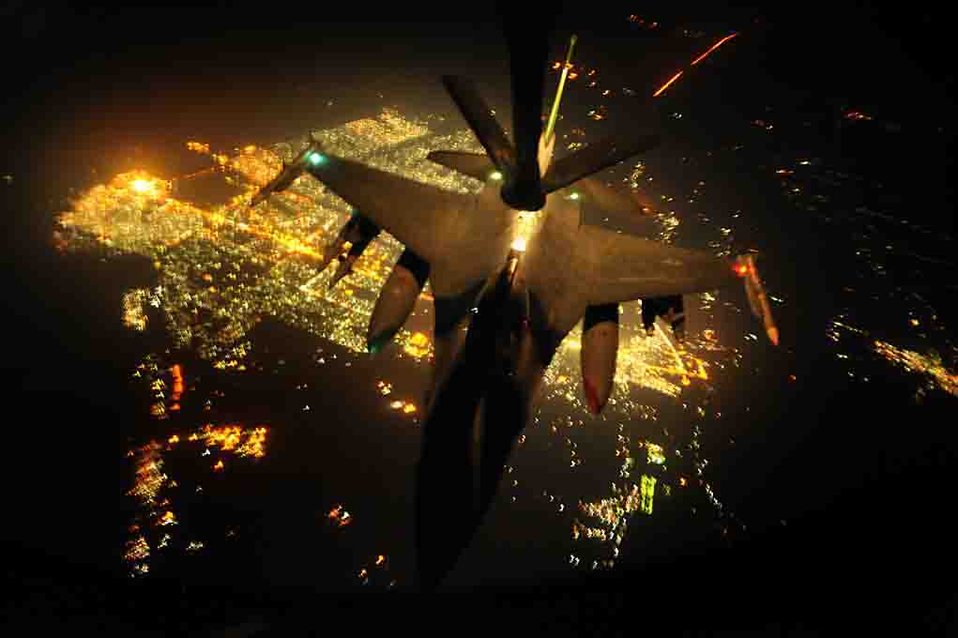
Agility and flexibility: Key components of airpower teamwork

An F-16 Fighting Falcon is refueled by a KC-135 Stratotanker during a combat mission Sept. 3 over Iraq. The KC-135 is from the 763rd Expiditionary Refueling Squadron, and the F-16 is from Joint Base Balad, Iraq.